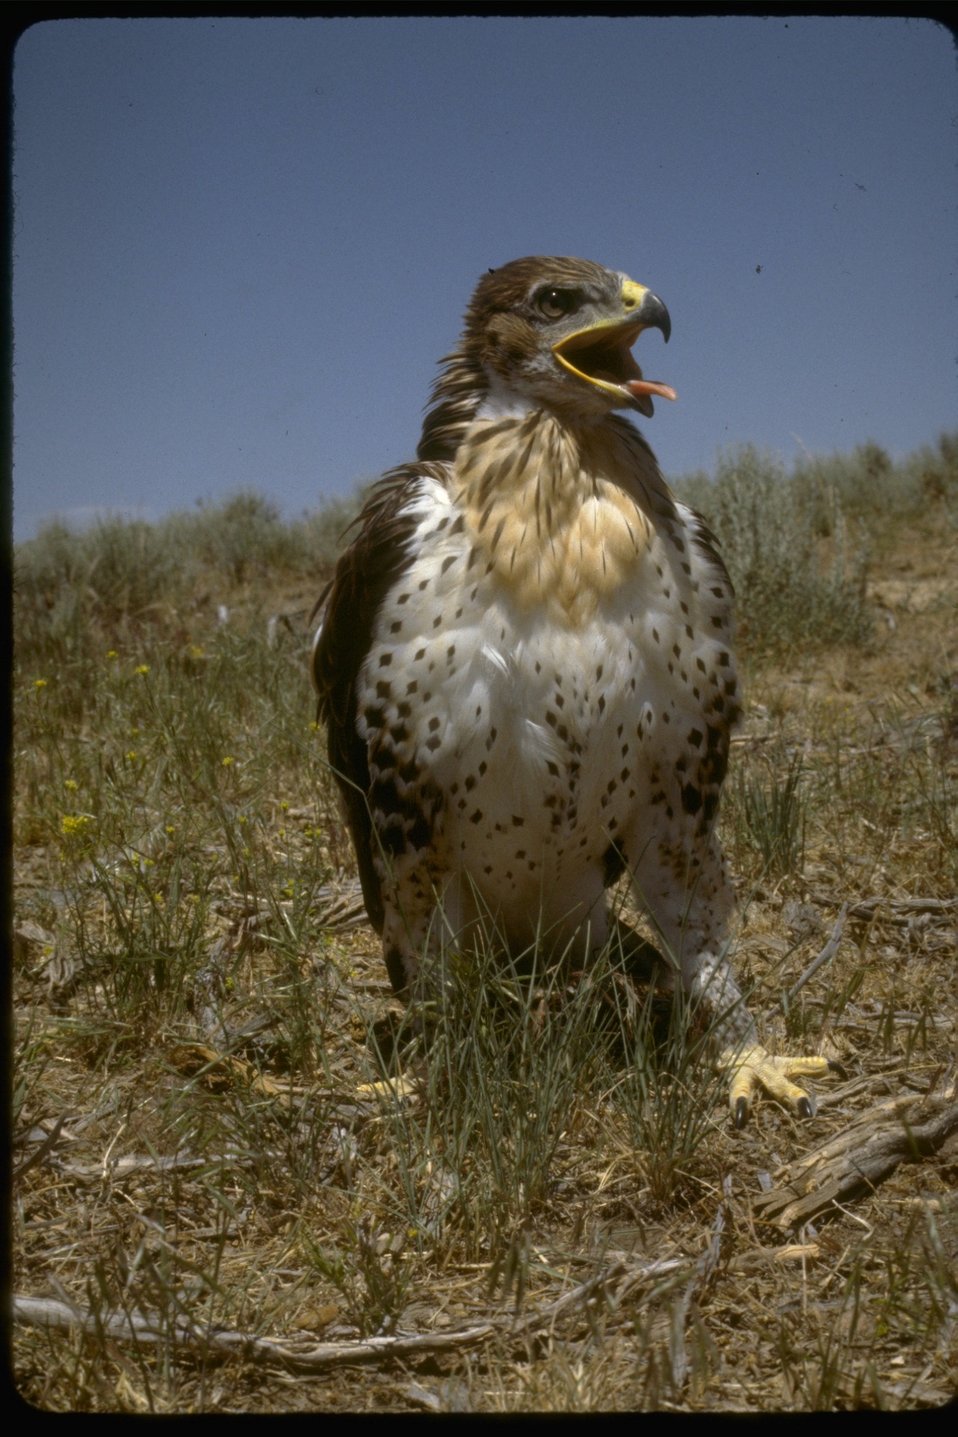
Frontal view of a Ferruginous rough-legged hawk.